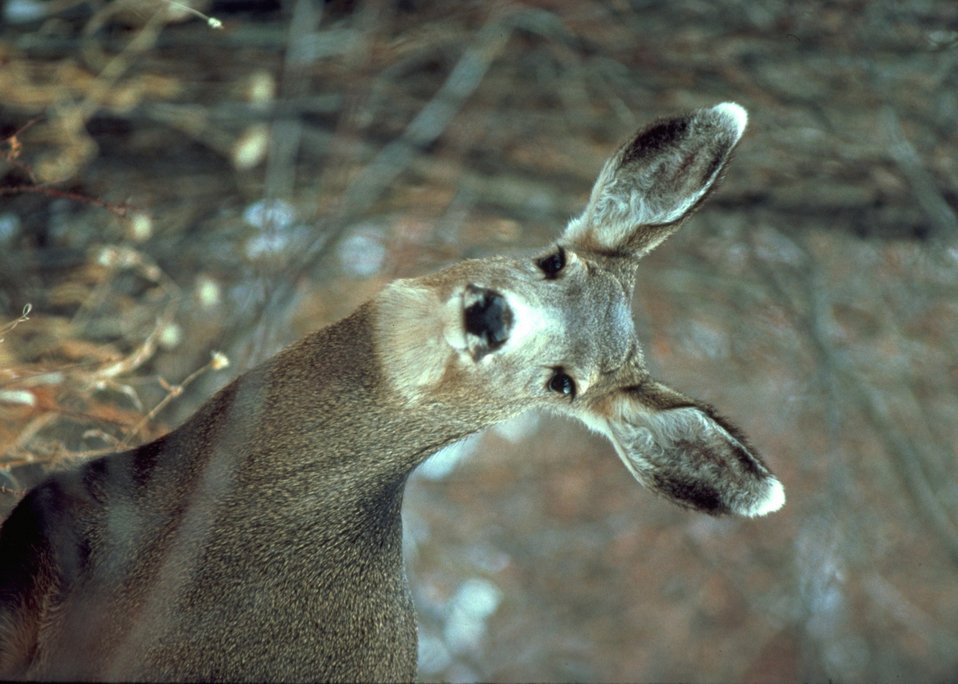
Alerted doe in the thick brush.